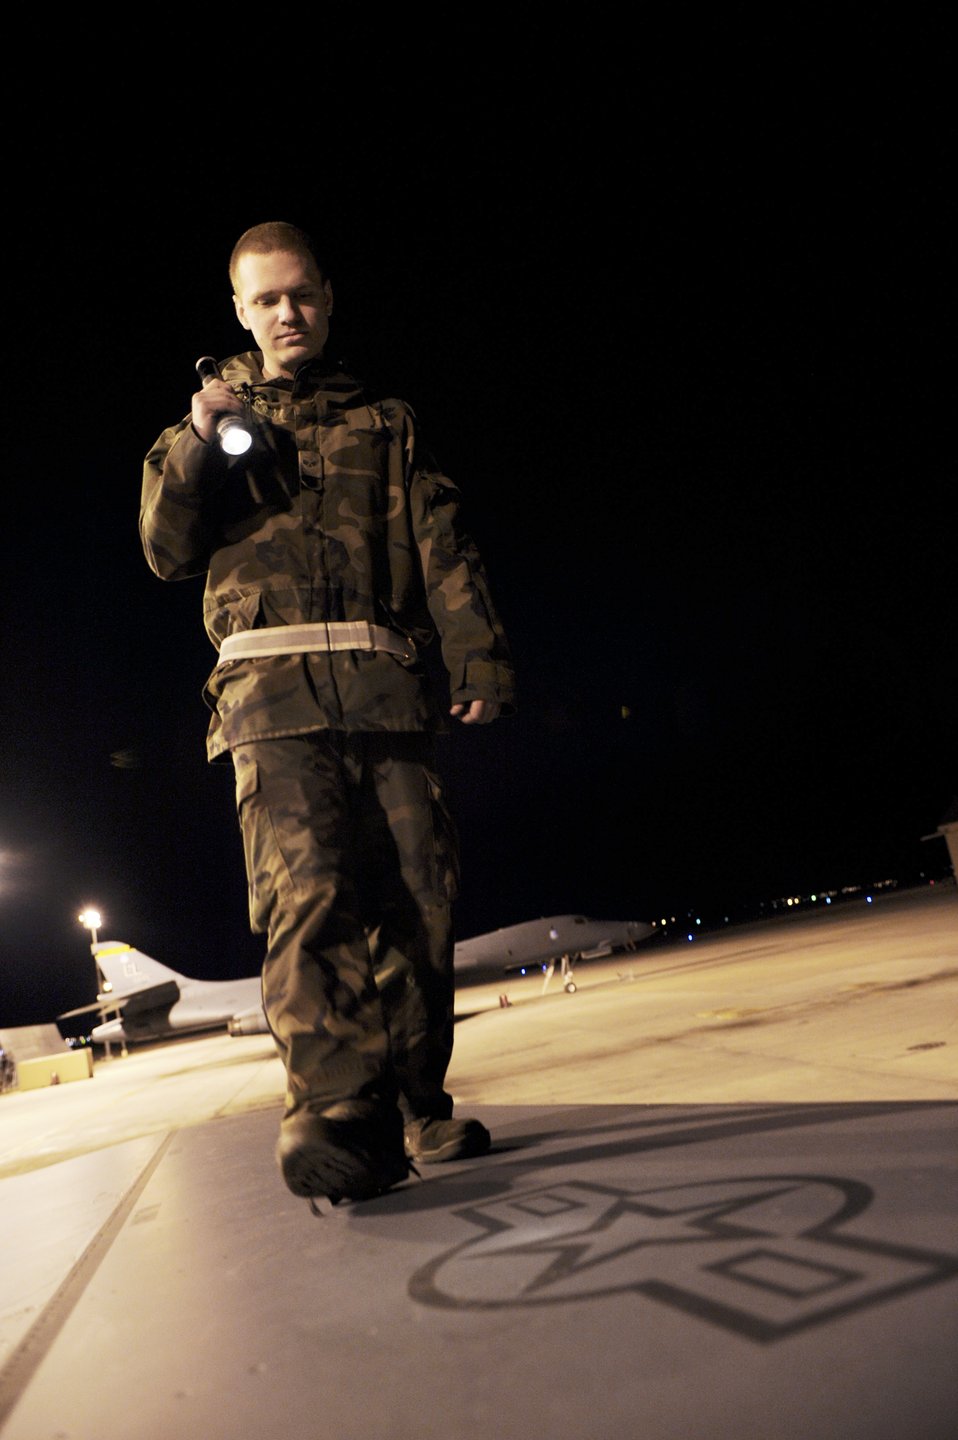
Inspection of a B-1B Lancer

Senior Airman Scott Foust inspects a B-1B Lancer wing for structural damage March 31, 2010, at Ellsworth Air Force Base, S.D. Crew chiefs send the B-1 into flight and recover every sortie flown. Airman Foust is a crew chief with the 28th Aircraft Maintenance Squadron.